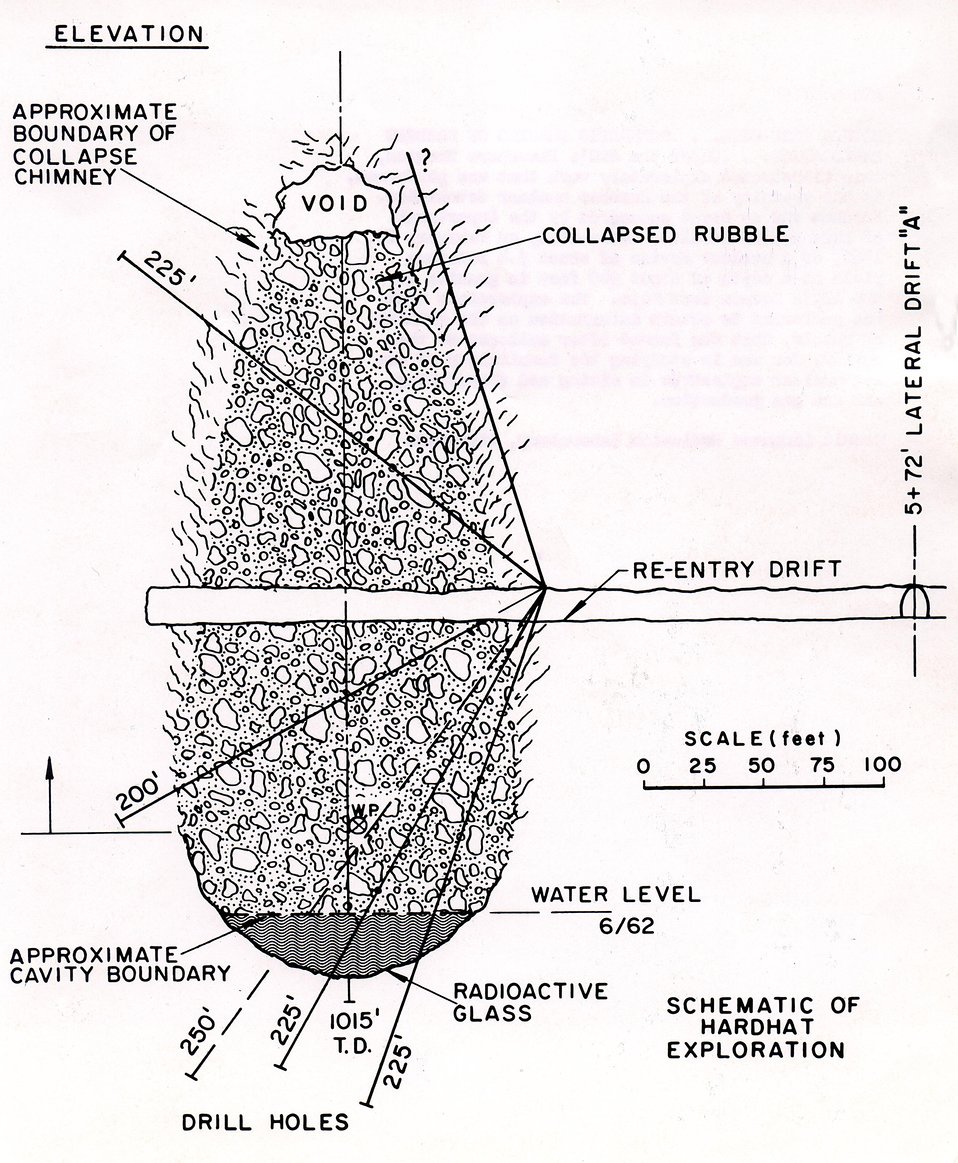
Under the AEC's Plowshare Program, this illustrates exploratory work that was performed, in the vicinity of the Hardhat nuclear detonation. Circa 1964.